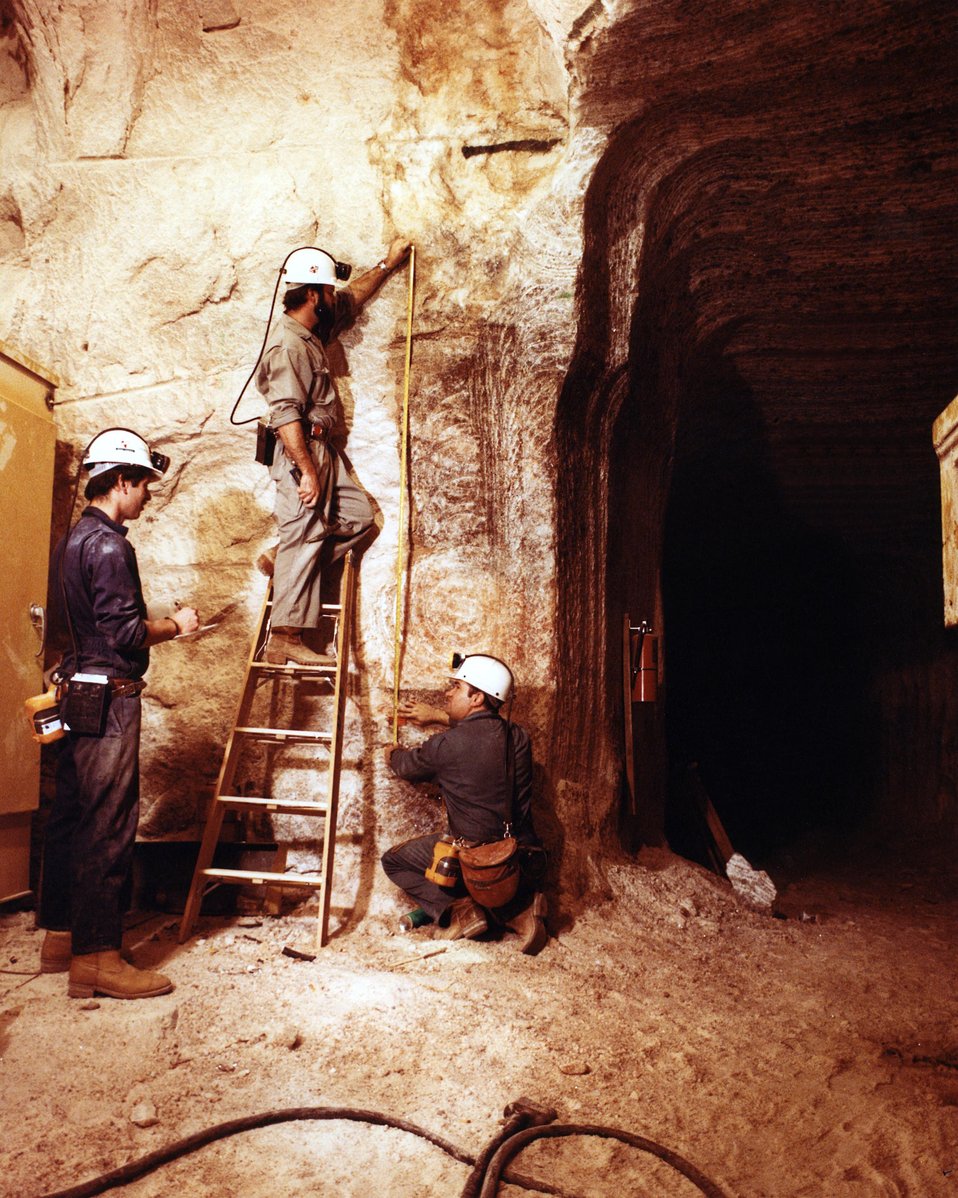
GEOLOGISTS SELECT A SITE FOR PLACING INSTRUMENTS THAT CAN DETECT ANY ROOF OR RIB DEFORMATION.

THE WASTE ISOLATION PILOT PLANT IS A DOE RESEARCH AND DEVELOPMENT FACILITY FOR DEMONSTRATING THE SAFE DISPOSAL OF TRANSURANIC RADIOACTIVE WASTES. TEST SHAFTS HAVE BEEN DRILLED TO A DEPTH OF 2,100 FEET. THE SHAFTS, ONE 6 FEET IN DIAMETER AND THE OTHER 12 FEET IN DIAMETER, PROVIDE AN ENTRY PASSAGE AND VENTILATION TO THE UNDERGROUND SALT ROCK FORMATION THAT IS BEING TESTED TO DETERMINE ITS SUITABILITY FOR RADIOACTIVE WASTE STORAGE.